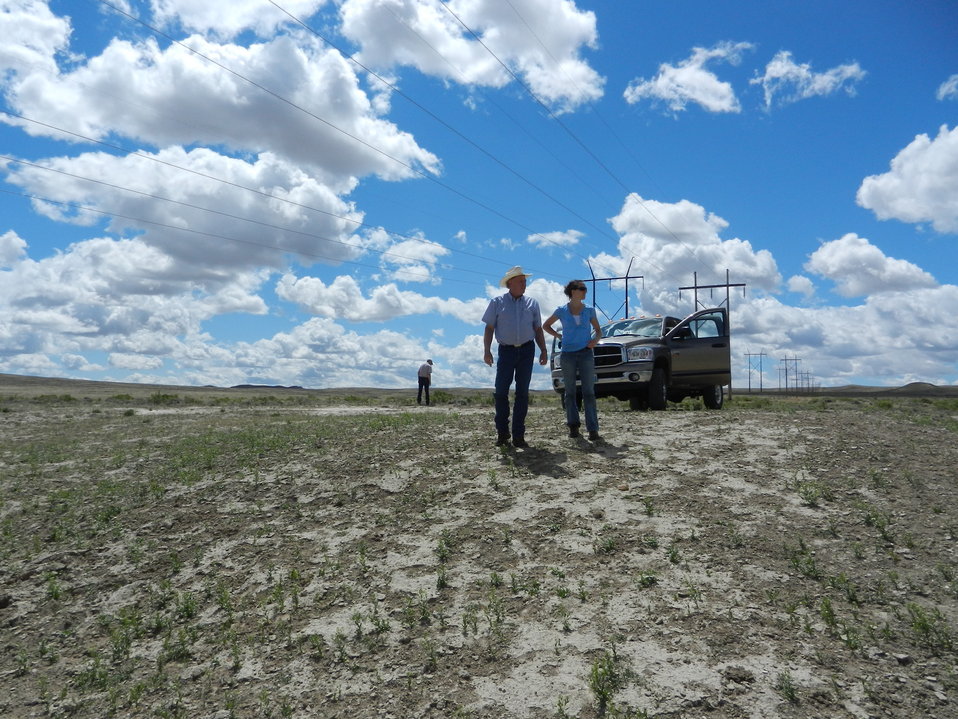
Sun Ranch owner Dennis Sun walks his land with U.S. Department of Agriculture (USDA) Natural Resources Conservation Service (NRCS) intern Meghan McPhaden in Casper, WY on June 20, 2012.